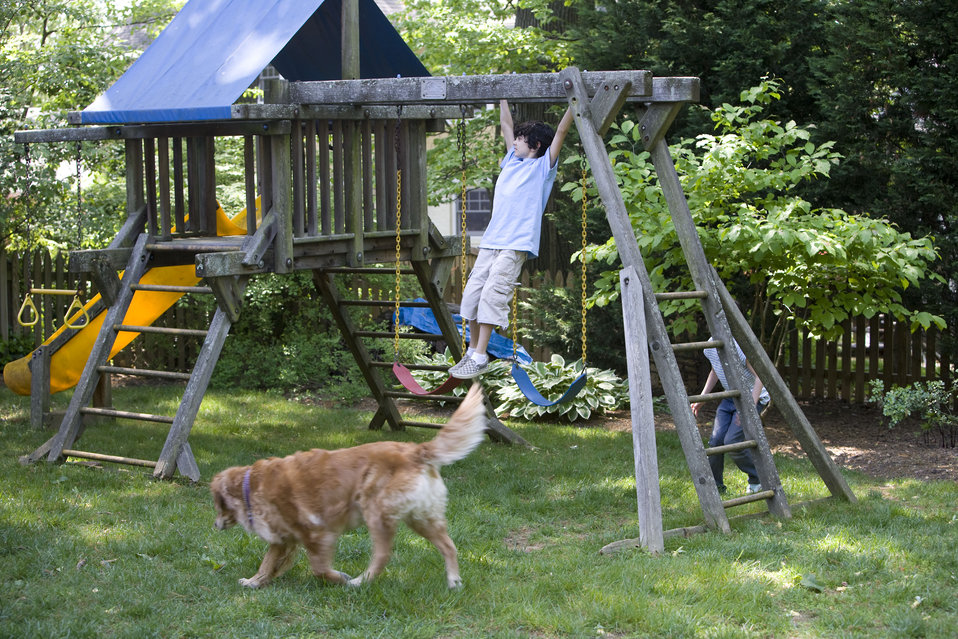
It's important to note that older wooden playsets may have been treated with arsenic and/or creosote, and therefore, parents need to know if these chemicals were used in their manufacture.